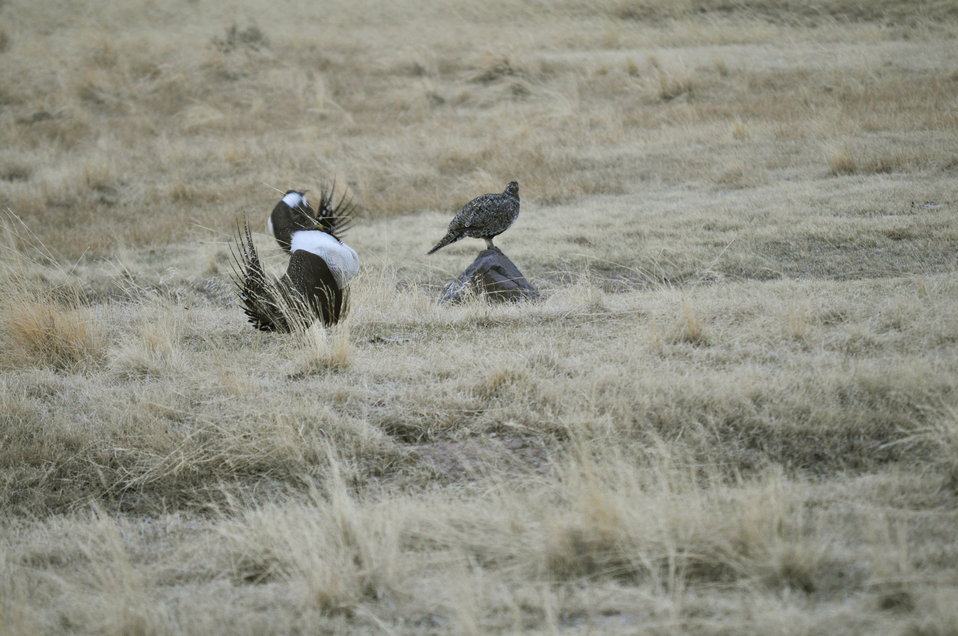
Greater Sage-Grouse

Male greater sage-grouse struts for female at lek (dancing or mating grounds) near Bodie, California.